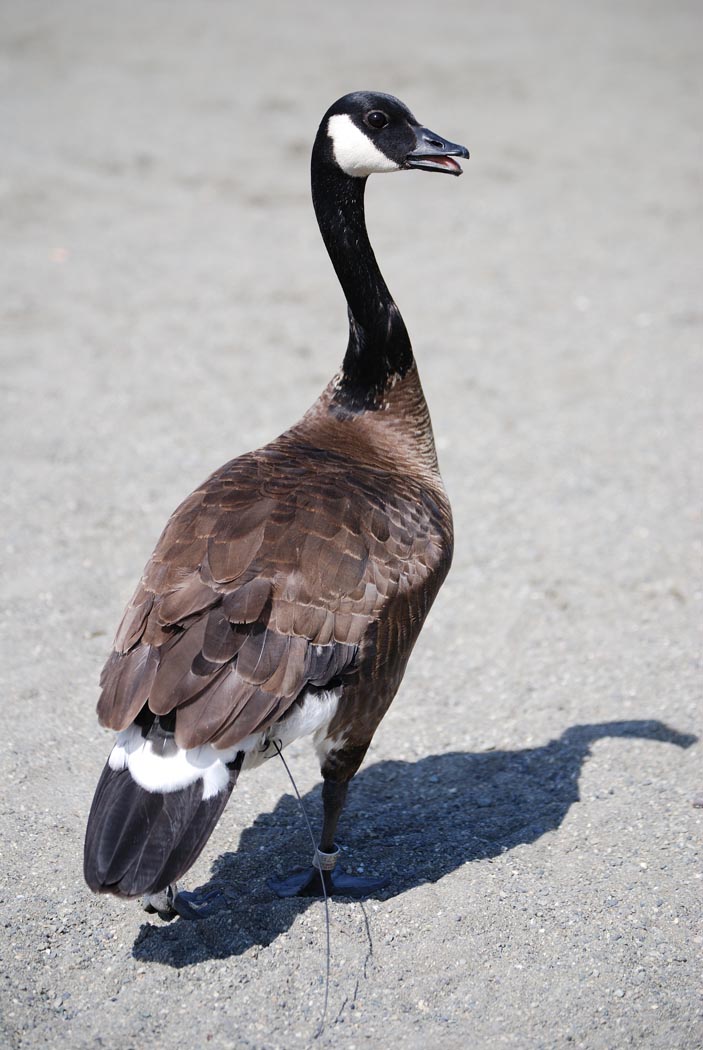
Canada goose at Goose Lake, Anchorage

Close view of Canada goose in Anchorage.